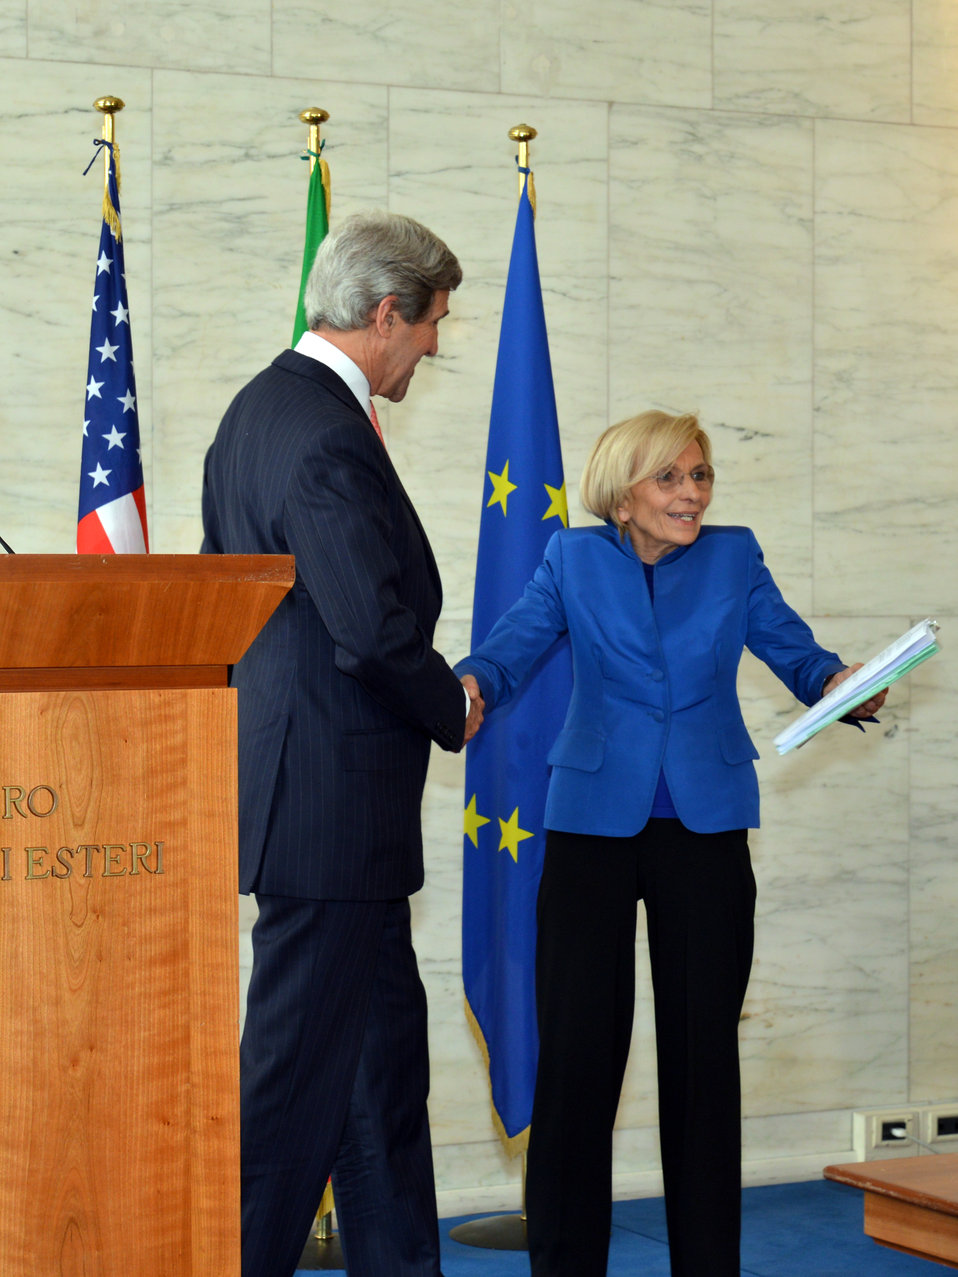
Secretary Kerry and Italian Foreign Minister Bonino Shake Hands

U.S. Secretary of State John Kerry and Italian Foreign Minister Emma Bonino shake hands after their joint press conference at the Ministry of Foreign Affairs in Rome, Italy, on May 9, 2013.